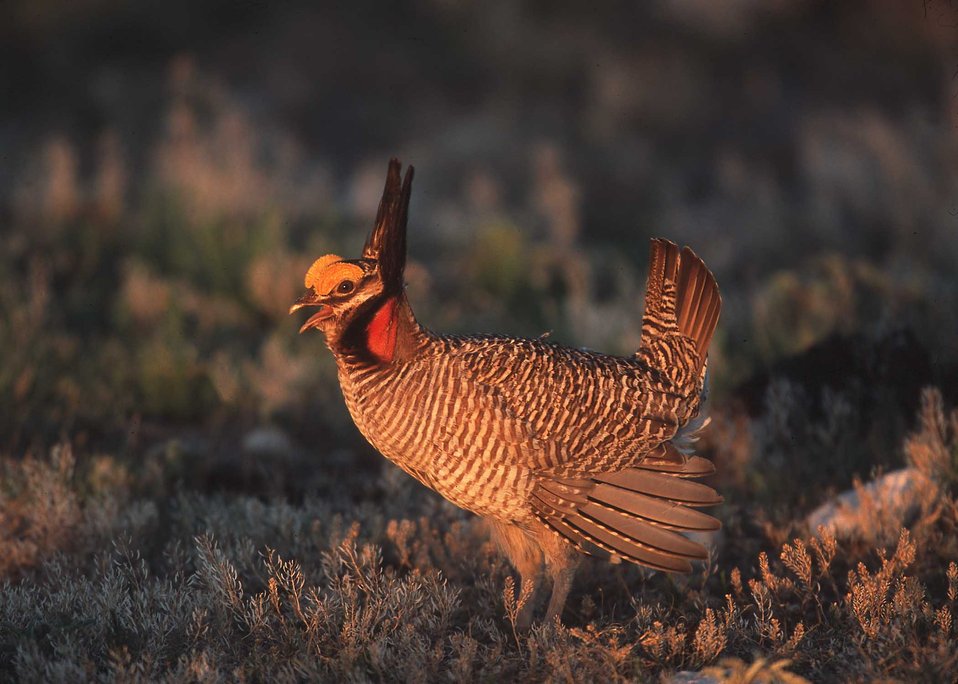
Lesser prairie chicken in Eastern New Mexico.